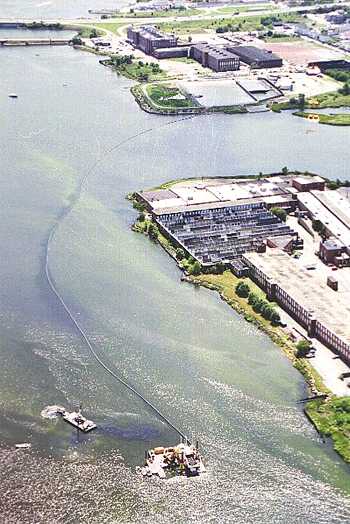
Summer 2000, Bird's eye view of dredge, pipeline, Pierce Mill Cove and Sawyer Street

The Sawyer Street de-sanding facility is the first of two contaminated sediment processing areas. Dredging sediment is pumped to a building at the end of Sawyer Street to filter out the larger more coarse material from the dredged sediment such as sand, shells and small rocks.

The coarser sand is filtered out of the finer grain, silty sediment which the majority of the PCBs are attached to. The remaining slurry of silt, sea water, and PCB contamination is then pumped again to a de-watering facility further down the harbor, where the water is pressed out, treated to stringent standards, and the resulting de-watered sediment (which is similar to hard packed soil in consistency) is properly disposed of at licensed off site landfills.

Science Fun Fact (or at least interesting to some):

Why do PCBs like silt better than sand?

If you were to compare a cupful of sand versus a cupful of silt, there would be more particle surface area in the cupful of silt. Since PCBs 'stick' to the surface area of something, there would be more PCBs in the cupful of silt.

More particles = more surface area = more PCBs.

Deeper into chemistry:

Silt comes from the breakdown of organic materials (plant and organisms). Chemical compounds that are made up of hydrocarbons (PCBs - polychlorinated biphenyls) are attracted to these organic surfaces because of the carbon content. Even more reason for the PCBs to attach themselves moreso to silt than to sand.